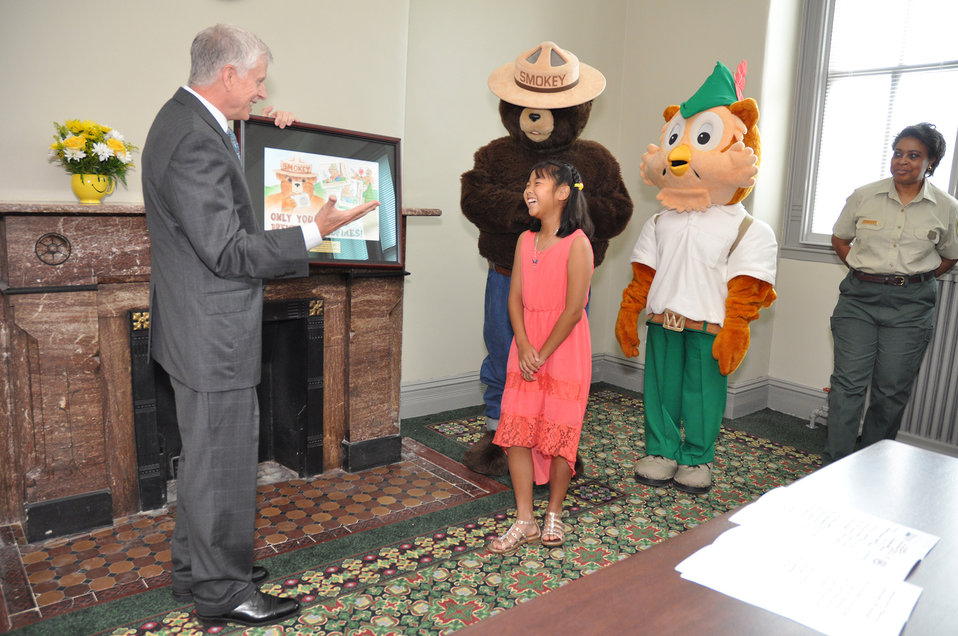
contestsmiles

U.S. Forest Service USFS) Chief Tom Tidwell talks about a drawing by Joyce Qin, the 11-year-old Memphis-area girl who became the 2014 Smokey Bear and Woodsy Owl Poster Contest winner. (L to R USFA Chief Tidwell, Smokey Bear, Joyce Qin, Woodsy Owl, and USFS National Information Center manager Renee Green-Smith).